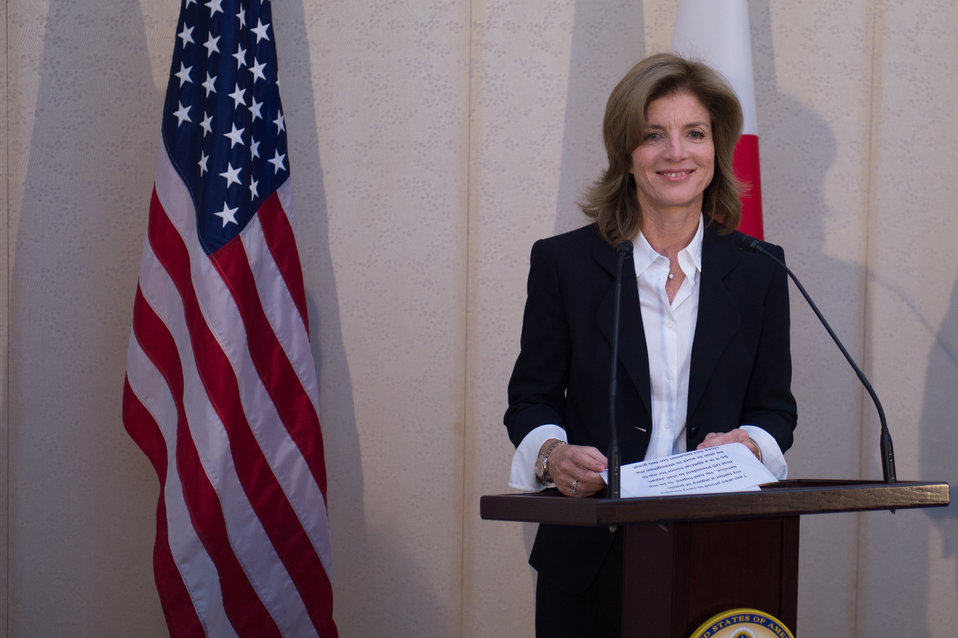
Ambassador Kennedy Makes Her First Remarks in Japan

U.S. Ambassador to Japan Caroline Kennedy makes her first statement after arriving in Narita, Japan, on November 15, 2013.